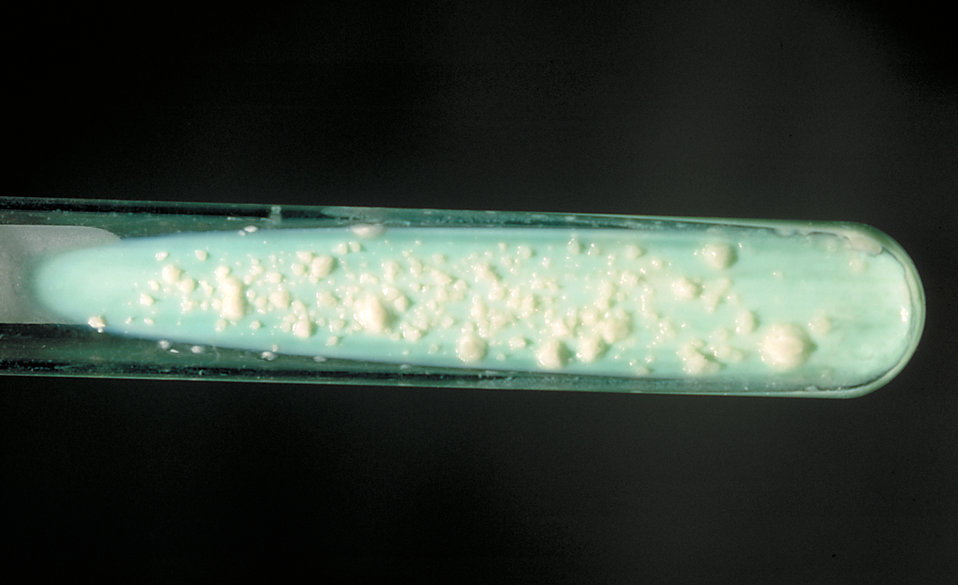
This is a Lowenstein-Jensen slant culture of the fungus Geotrichum candidum grown at 37�C.